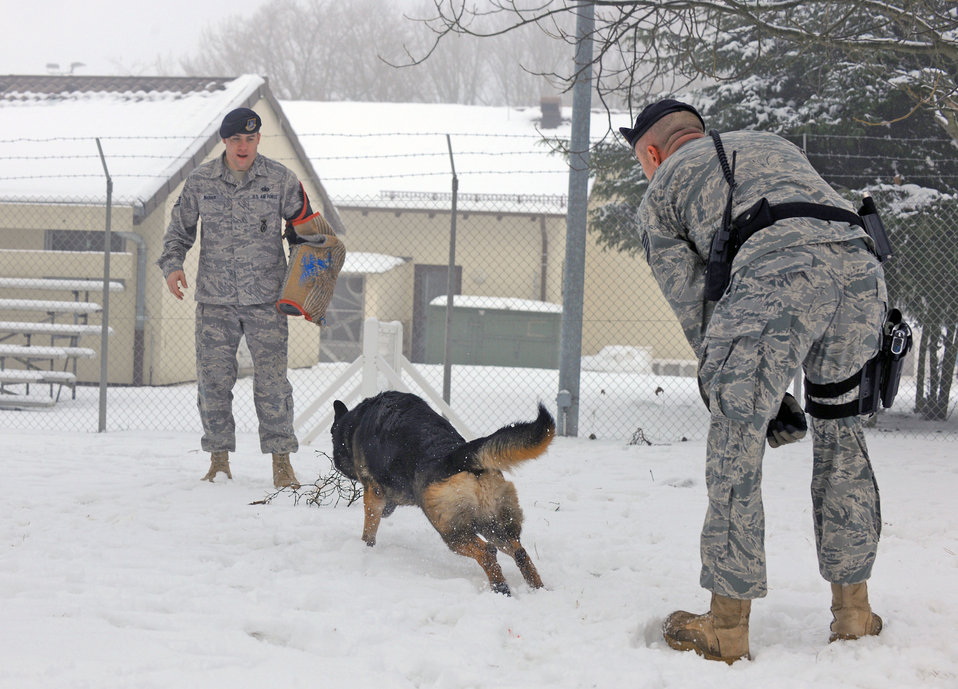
Military working dogs

Staff Sgt. David Simpson gives Robson, a 5-year-old German shepherd, the command to attack Staff Sgt. William Washer during a training exercise Dec. 29, 2010, at the 52nd Security Forces Squadron military working dog facility at Spangdahlem Air Base, Germany. Handlers play and train with their dogs in the snow to help them acclimate to cold German winters and harsh conditions in which they must work. Sergeant Simpson and Sergeant Washer are 52nd SFS military-working-dog handlers.